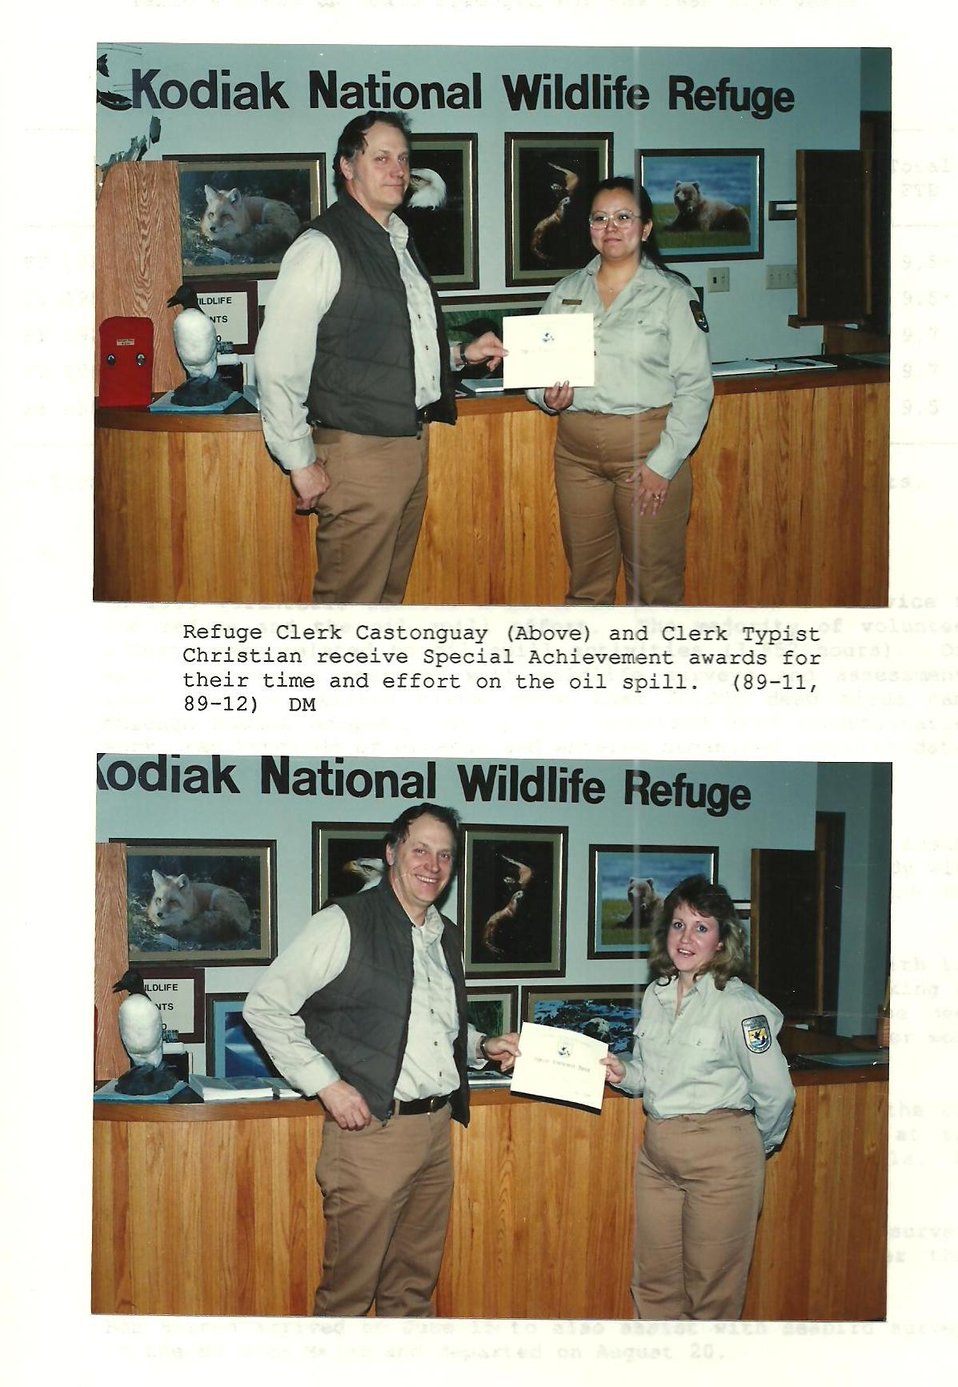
(1989) Castonguay and Christian Awards

Credit: USFWS

Source and Contact: Kodiak National Wildlife Refuge